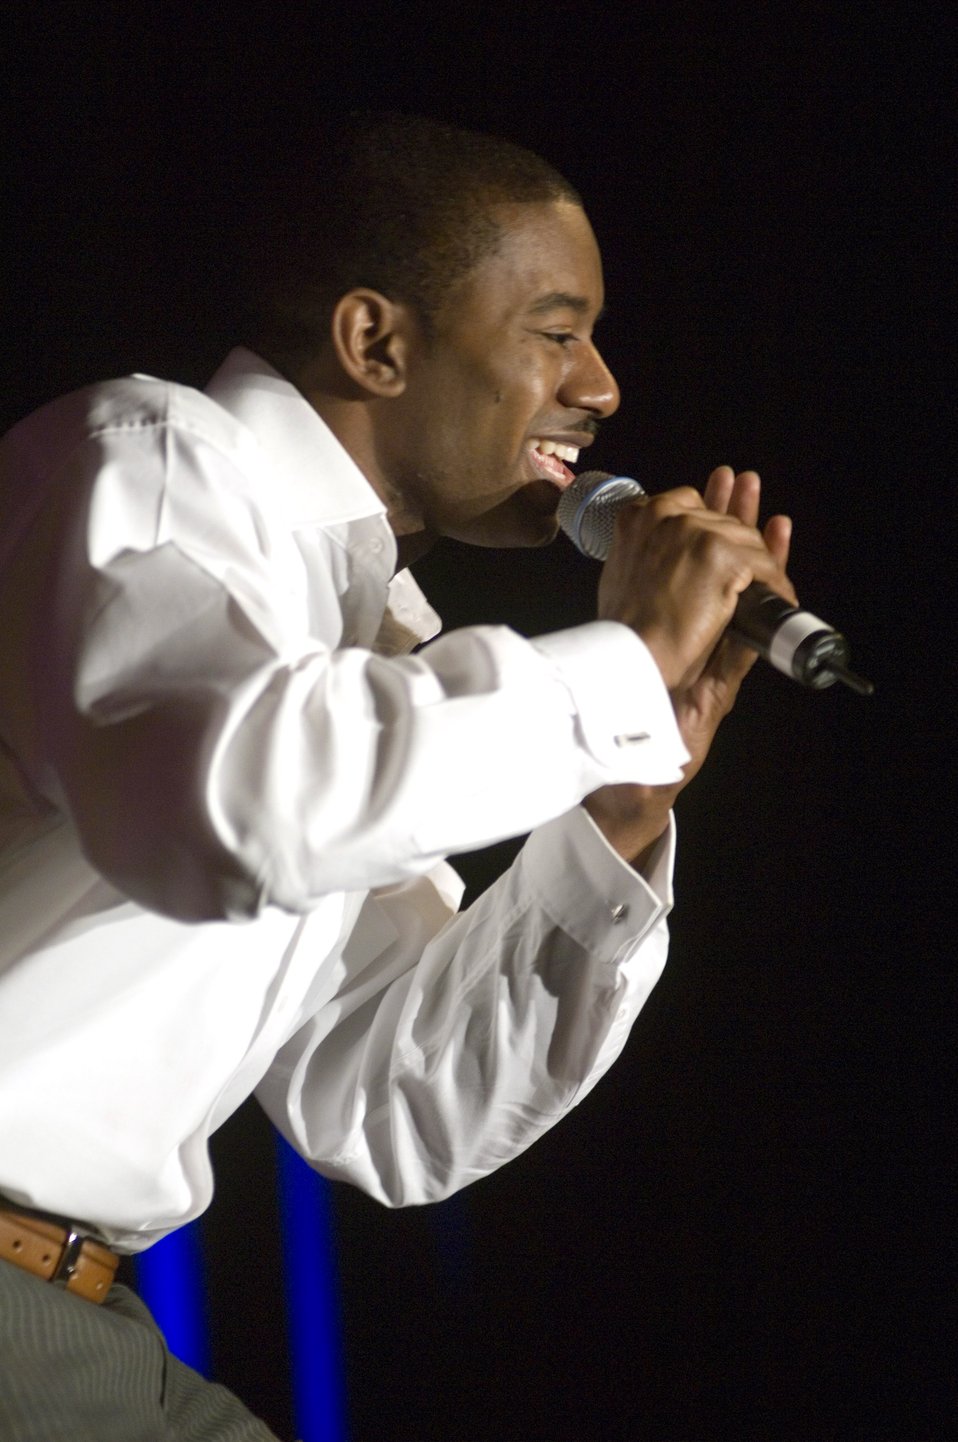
'USAFE Idol'

Senior Airman Antonio Howard entertains the crowd on his way to first place in the United States Air Forces in Europe's